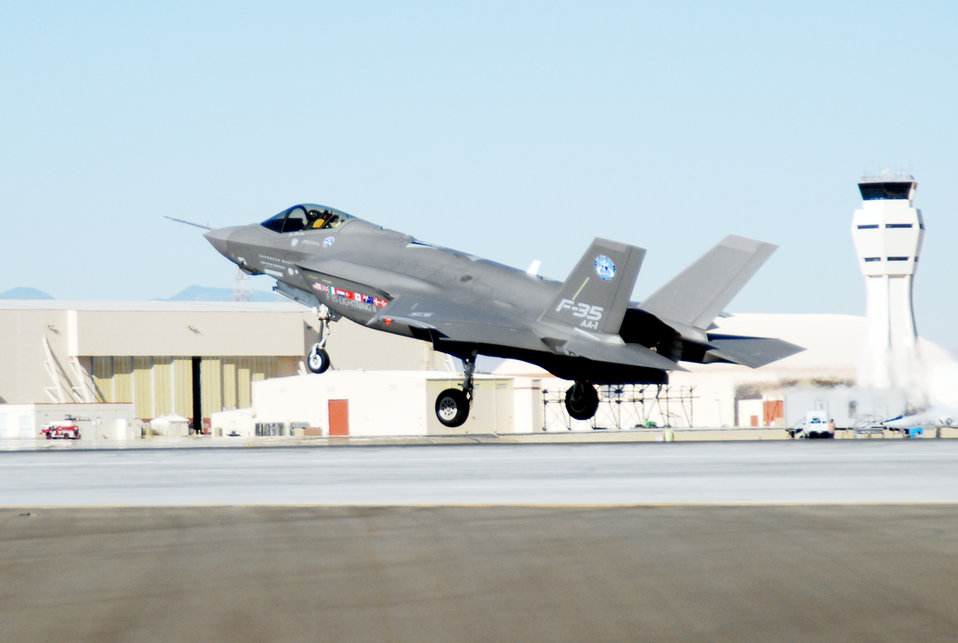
Nellis officials plan for F-35's opportunities, challenges

The U.S. Air Force Warfare Center at Nellis Air Force Base, Nev., is preparing for the arrival of the F-35 Lightning II joint strike fighter, like the one pictured here as it undergoes testing at Edwards Air Force Base, Calif.